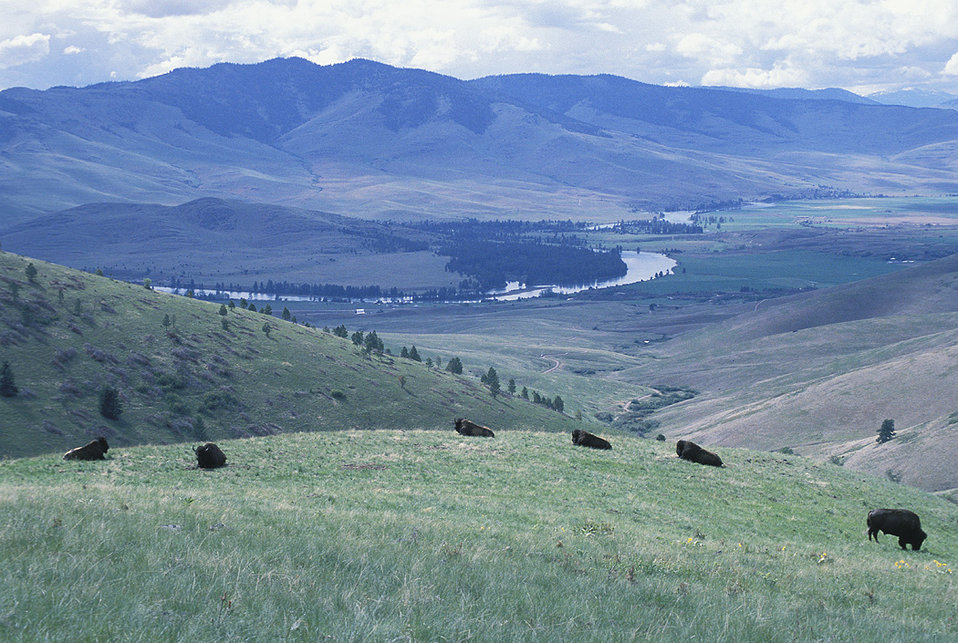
National Bison Range scenic

Bison rest and graze on the National Bison Range in Montana.